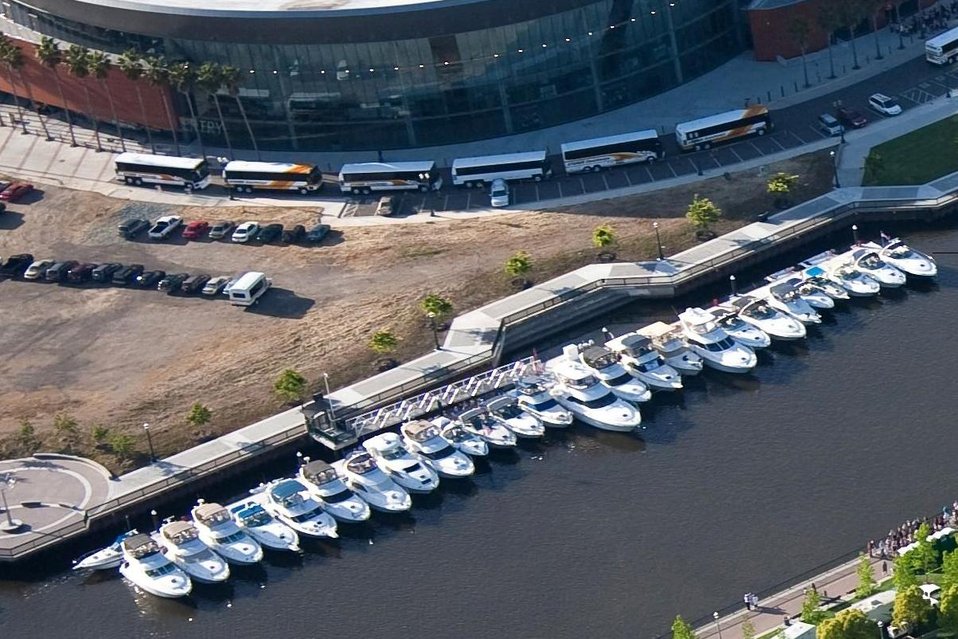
Stockton Guest Dock

This dock was partially paid for by a Boating Infrastructure Grant [BIG] in 2008. Similar grants are awarded by the U.S. Fish and WIldlife Service each year. (City of Stockten/USFWS)